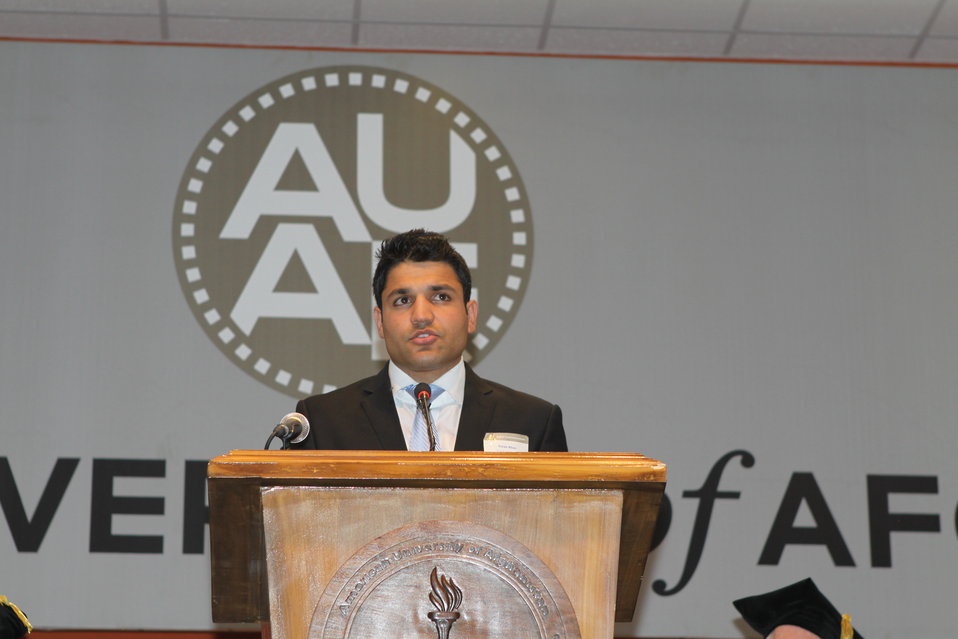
100526 AUAF Graduation 160